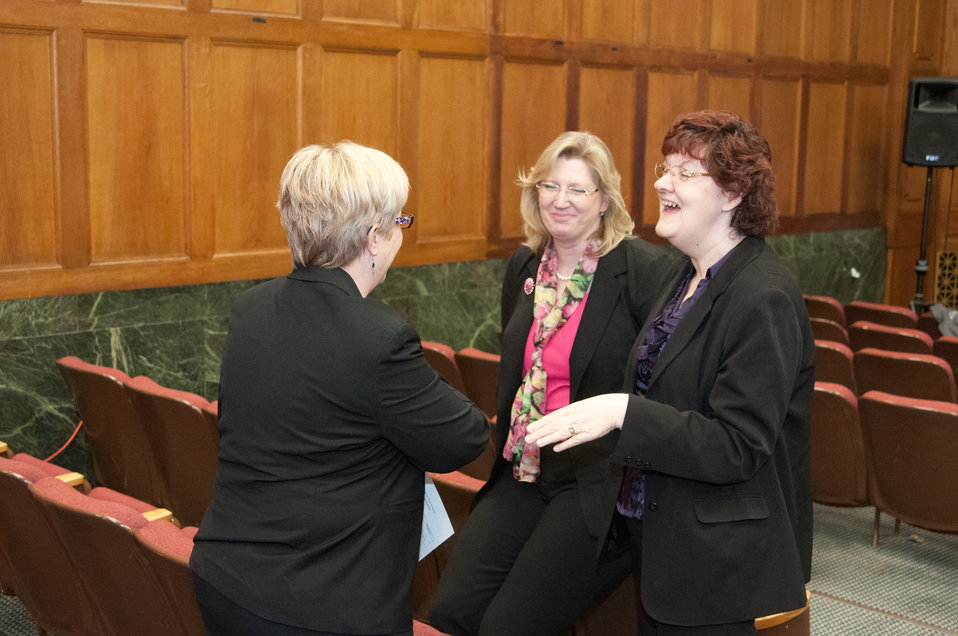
(L to R) Council of State Administrator’s of Vocational Rehabilitation (CSAVR) Business Director Kathy West, U.S. Department of Agriculture (USDA) Office of Human Resources Management (OHRM) Disability Employment Program Manager Alison Levy, and USDA Food safety Inspection Service (FSIS) Selective Placement Program Manager Sharon Randle discuss topics at the USDA’s OHRM Disability Employment Program Team Training at USDA in Washington, D.C. on Tuesday, May14, 2013.